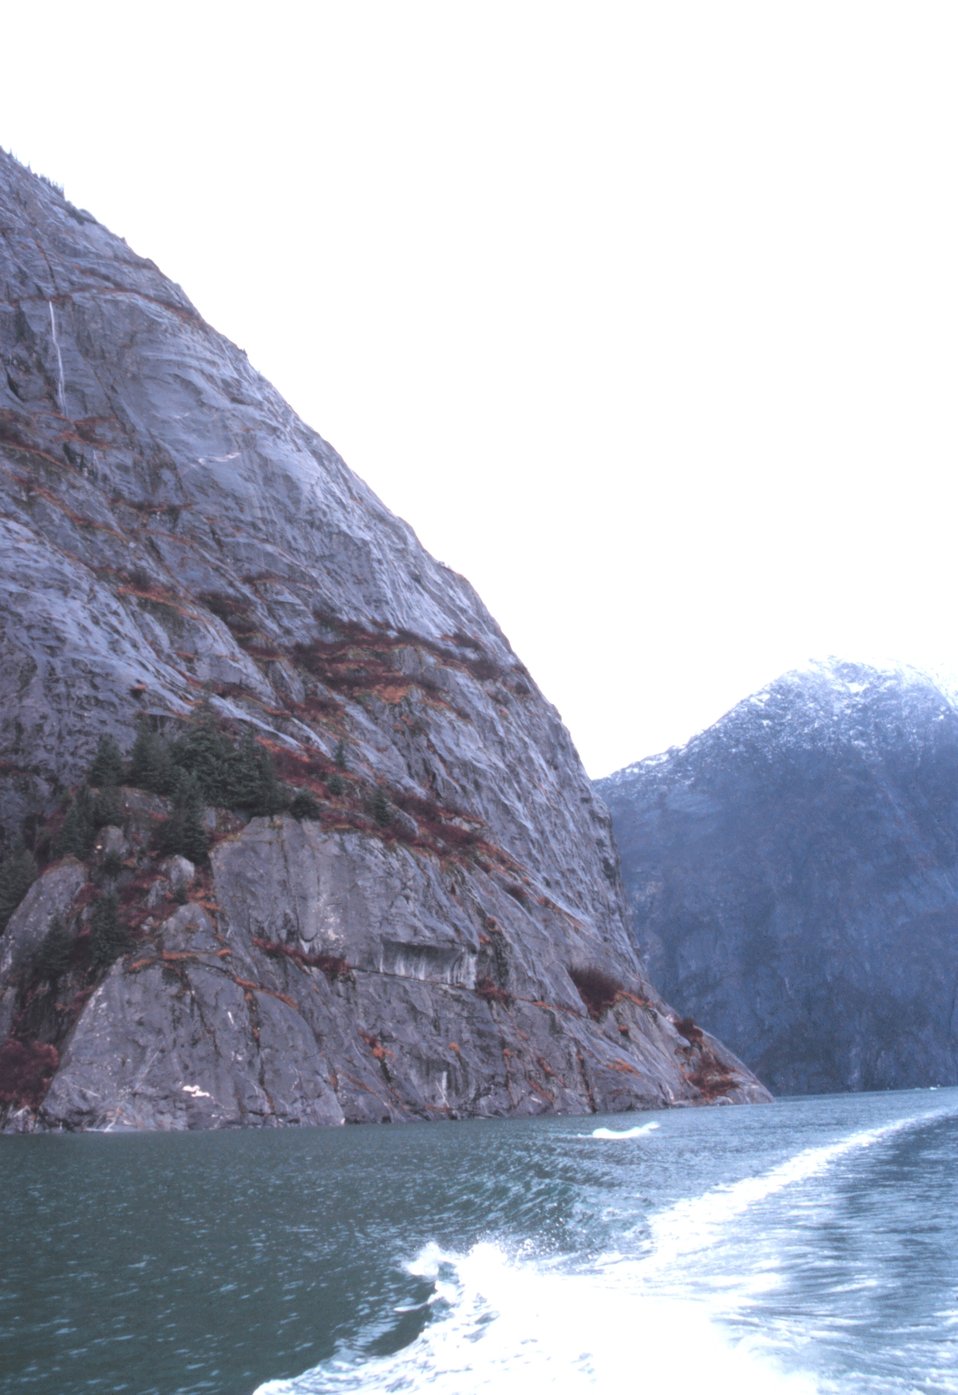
A wake disturbs the placid waters of Tracy Arm Fjord